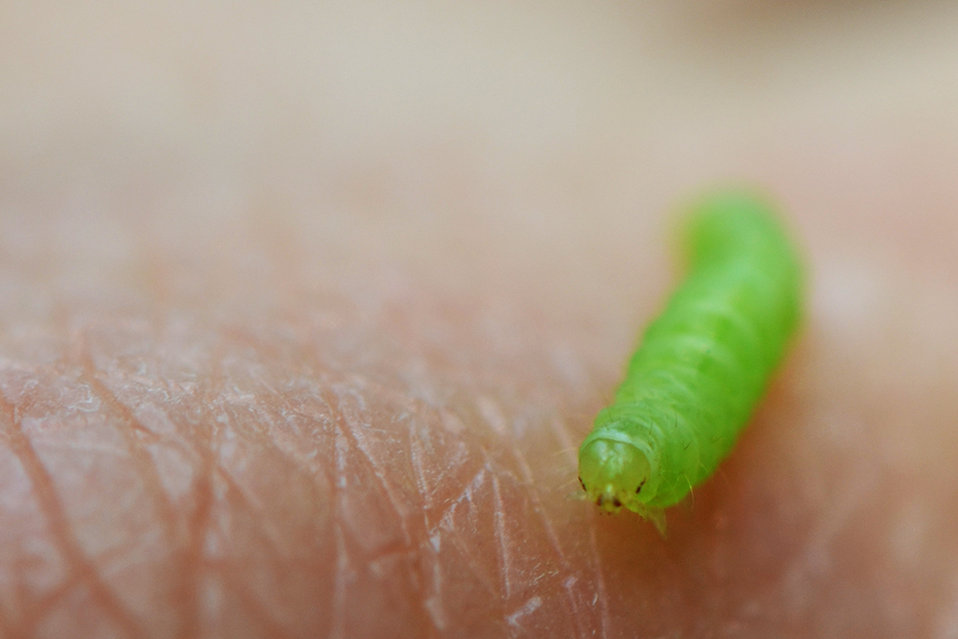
Boxelder leafroller